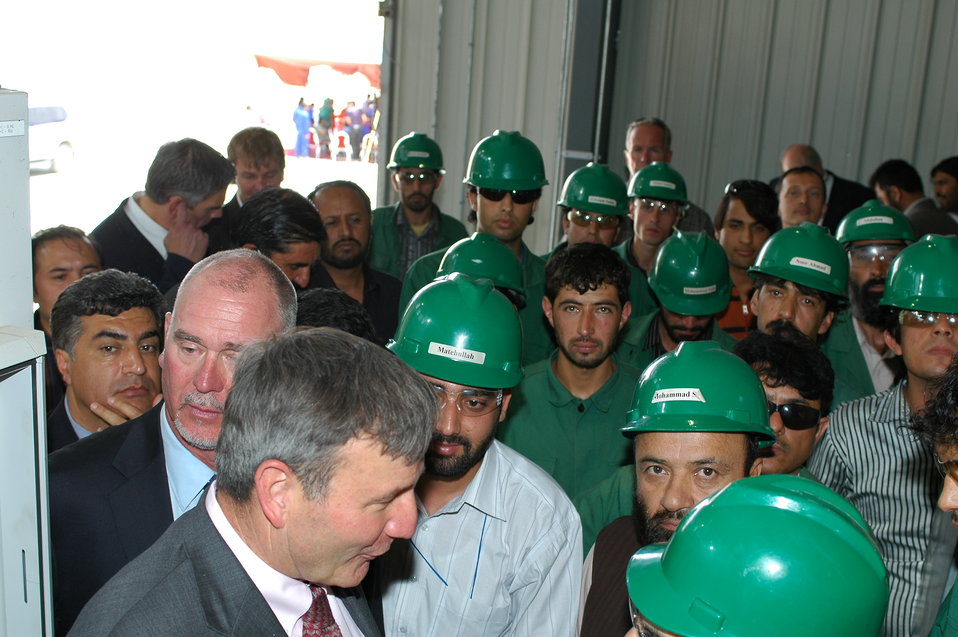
105 MW Tarakhil Power Plant Handover